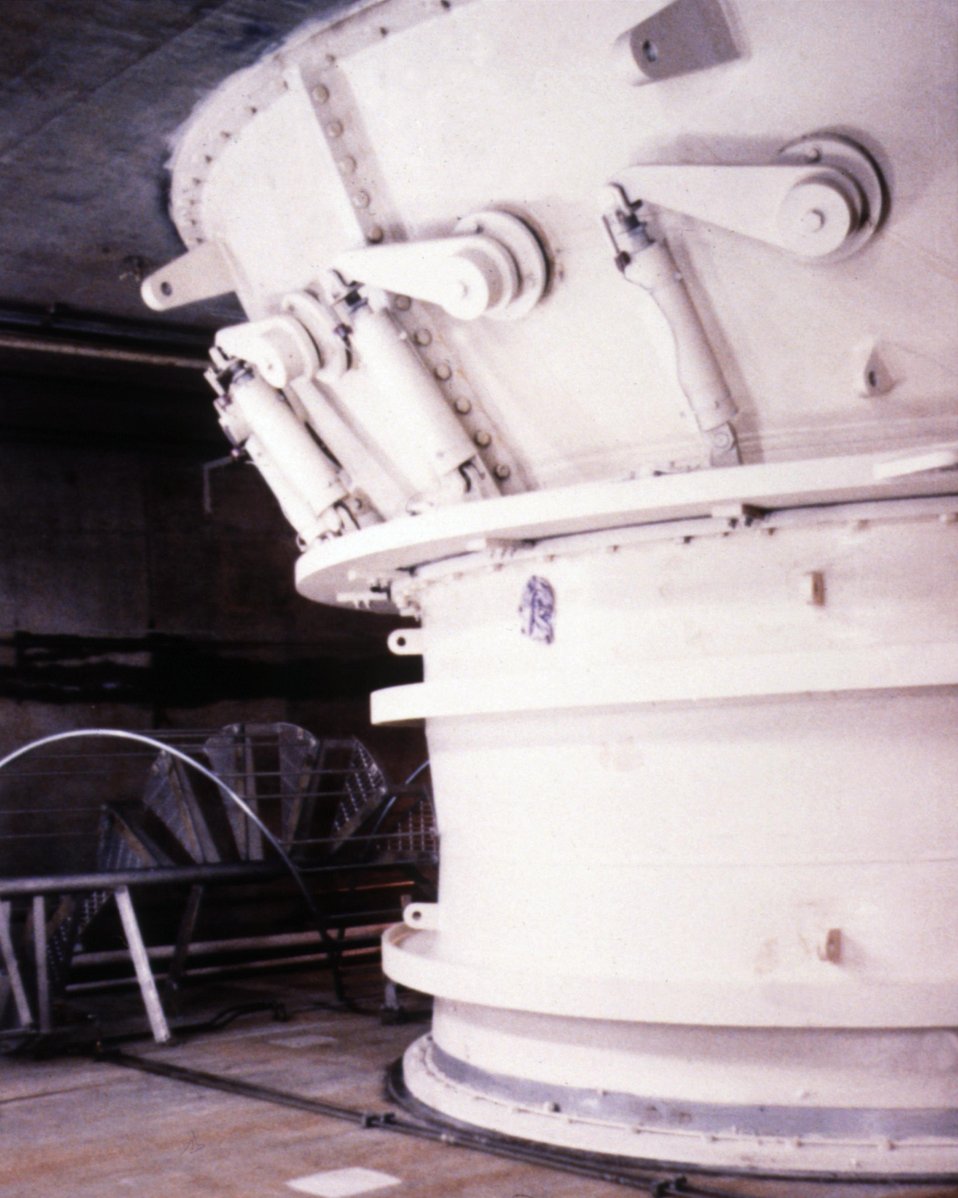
VIEW OF WICKET GATES CONTROL ARMS FOR OPEN-PIT BULB TURBINE.

THE DOE SMALL-SCALE HYDROPOWER PROGRAM CONSISTS OF 19 PROJECTS AND DEMONSTRATES THE VIABILITY OF SMALL-SCALE HYDRO-POWER WITH AVAILABLE TECHNOLOGY. THE BROAD RIVER PROJECT, BEGUN IN JANUARY, 1983, WENT ON LINE DECEMBER 27, 1987. UTILIZING ONE OPEN-PIT TUBULAR TURBINE THAT PRODUCES A MAXIMUM OF 4,140 KILOWATTS, THE DAM PROVIDES A GROSS HEAD OF 20.2 FEET WITH AN ANNUAL STREAM FLOW OF 2,472 CFS.